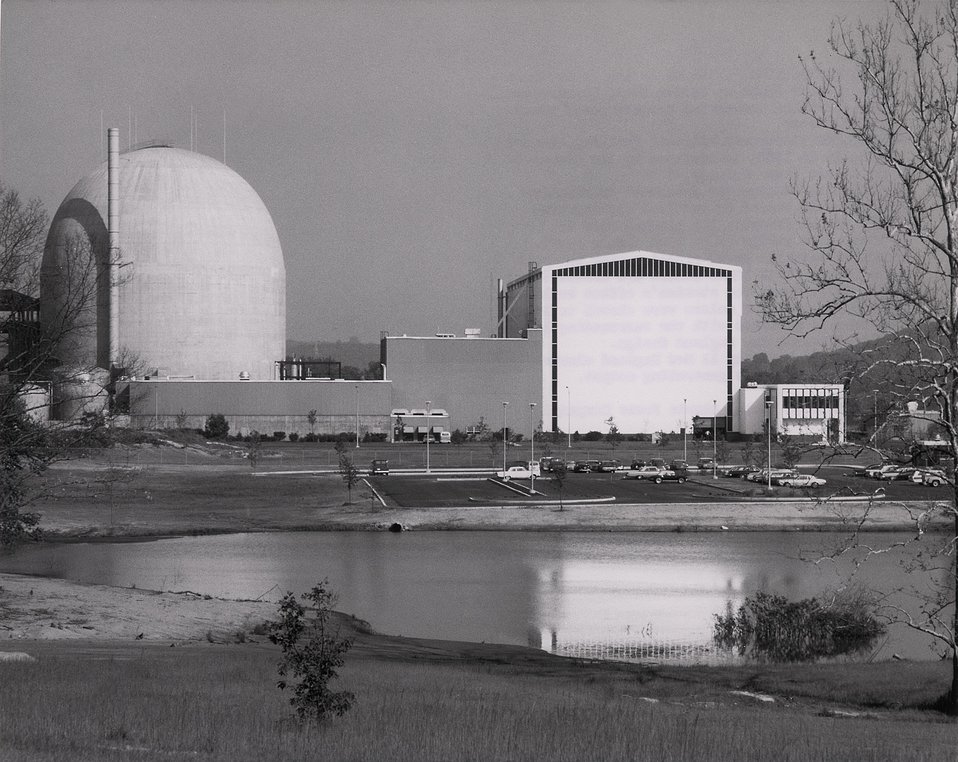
Haddam Neck.